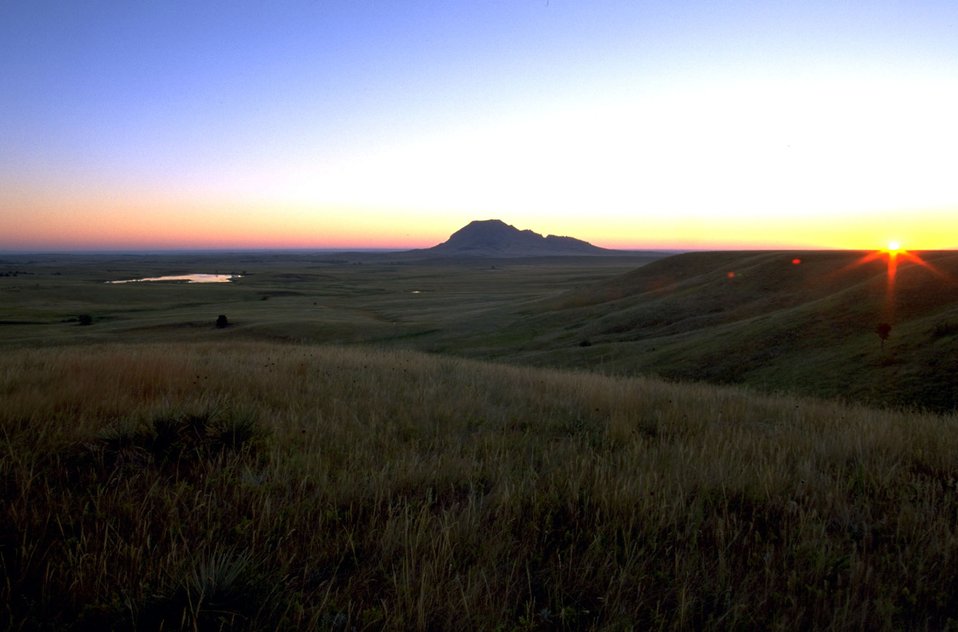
North end of Fort Meade with Bear Butte in the background at Sunset